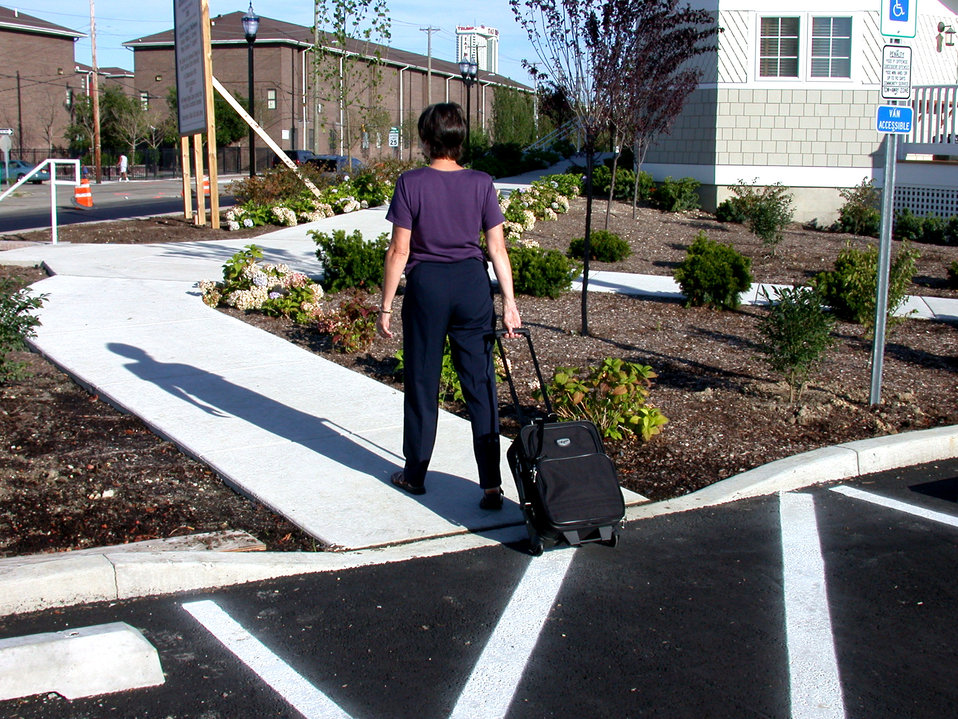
Pulling a carry-on luggage bag equipped with wheels, this woman was crossing the road in a crosswalk, and was about to transition unto a sidewalk via what is termed a 'curb ramp', which made the transition almost effortless. The curb ramp alleviated her from having to lift the bag up, and on to the sidewalk, therefore, would be highly beneficial to the mobility-challenged, as well as those encumbered with a stroller, shopping cart, baby carriage, etc.